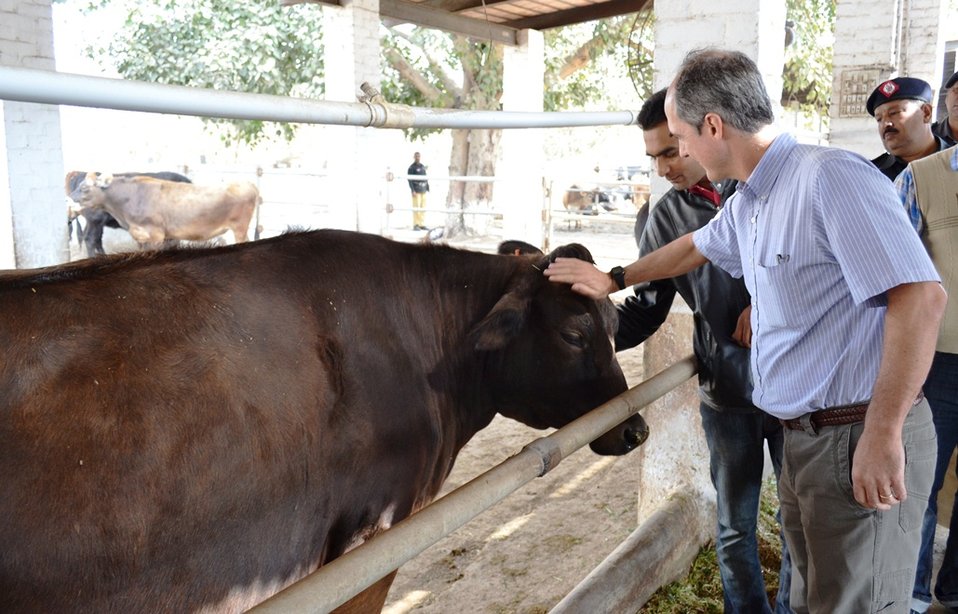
Ted Gehr, Director USAID Punjab, taking a tour of the Nestle Sarsabz demonstration dairy farm in Okara, where USAID-DRDF Dairy Project's farmer trainings are held.